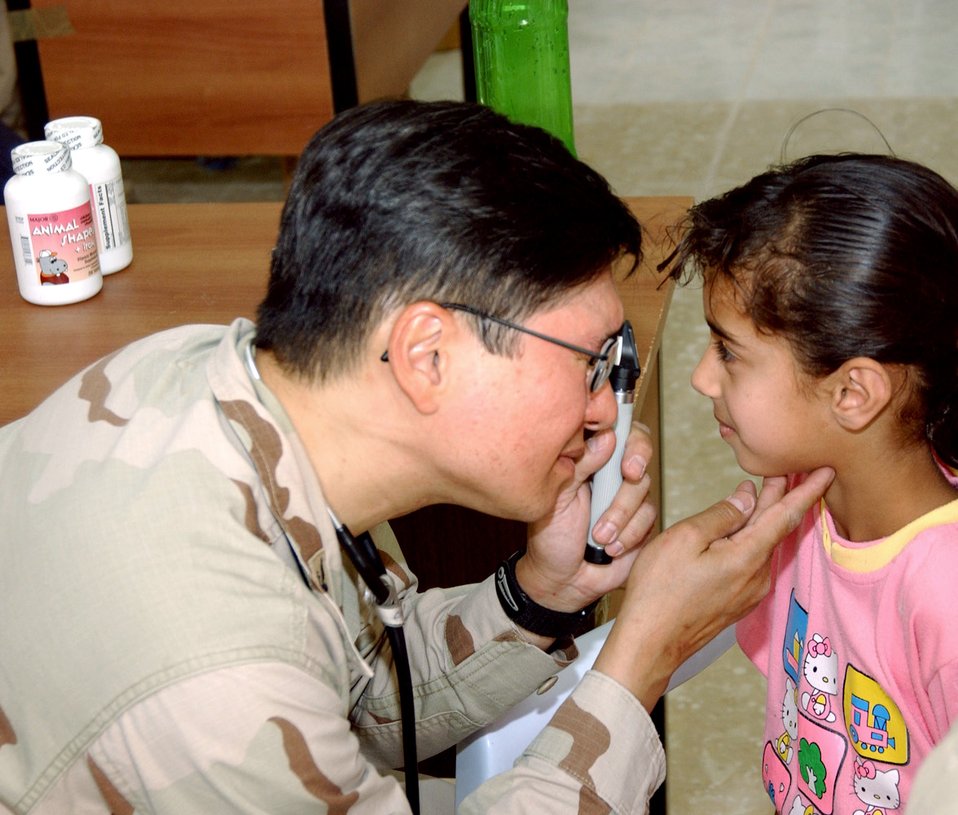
Operation Iraqi Freedom

BALAD AIR BASE, Iraq (AFPN) -- Col. (Dr.) John Cinco checks an Iraqi girl's eyes during a medical civic-action project visit. A small contingent of Air Force medical people treated local villagers for minor illnesses and injuries. Dr. Cinco is the 332nd Contingency Aeromedical Staging Facility chief flight surgeon here, and is deployed from the 43rd Medical Group at Pope Air Force Base, N.C.